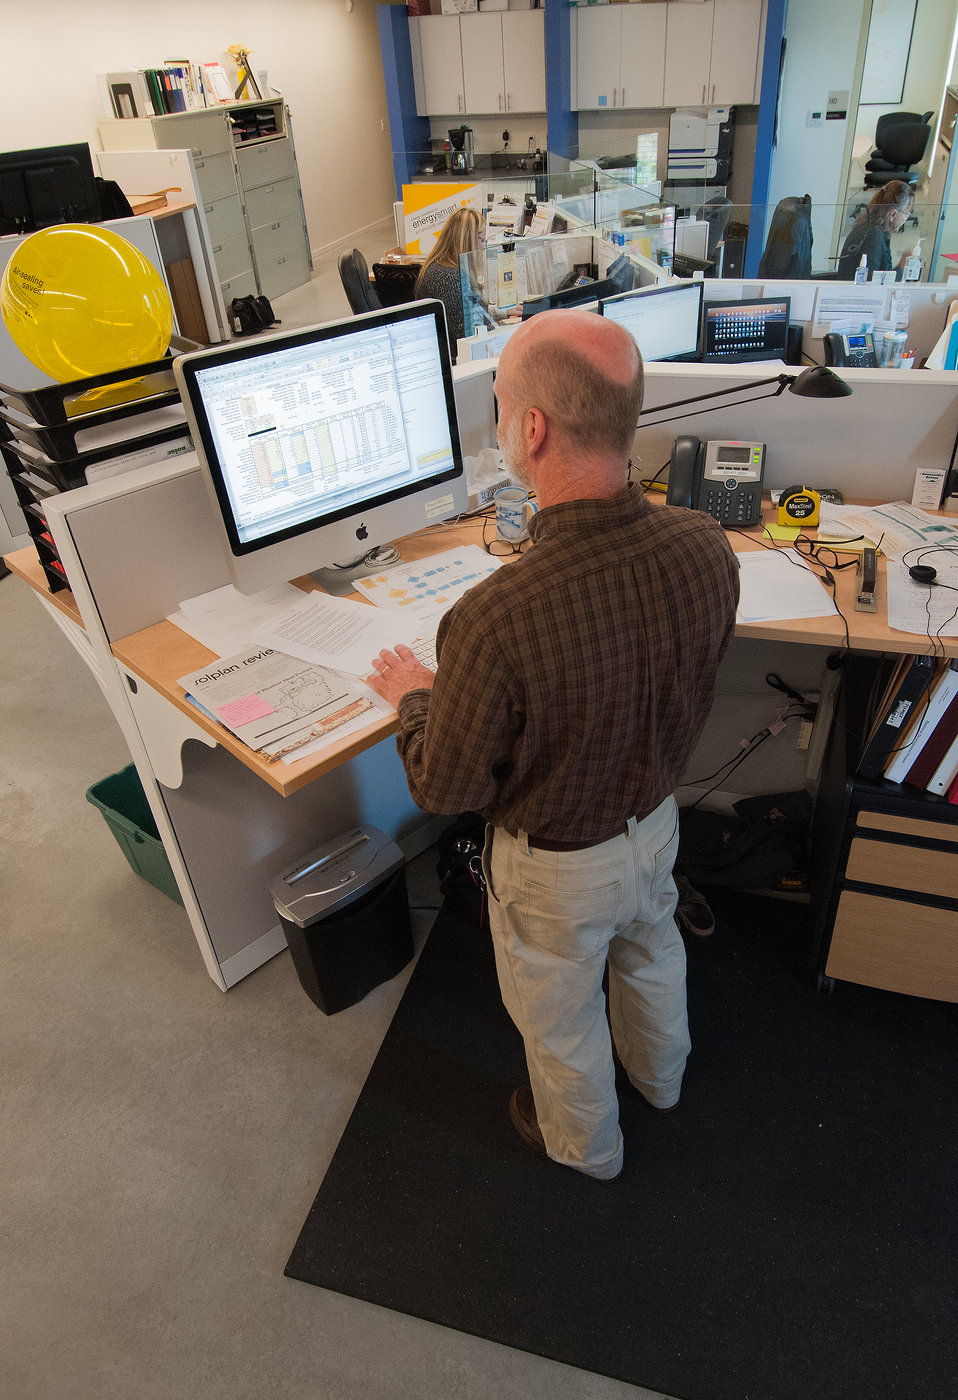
Paul Zabriskie works at Building Performance Institute, which is an accredited contractor co-located in the Central Vermont Community Action Council in Barre, VT. The institute offers a weatherization program for clients homes. The mission of the CVCAC is to create economic security for low to moderate-income residents in rural Central Vermont. Through the assistance of a U.S. Department of Agriculture (USDA) Rural Development (RD) Community Facilities Grant the CVCAC was able to consolidate their services downtown on Sep. 17, 2013.